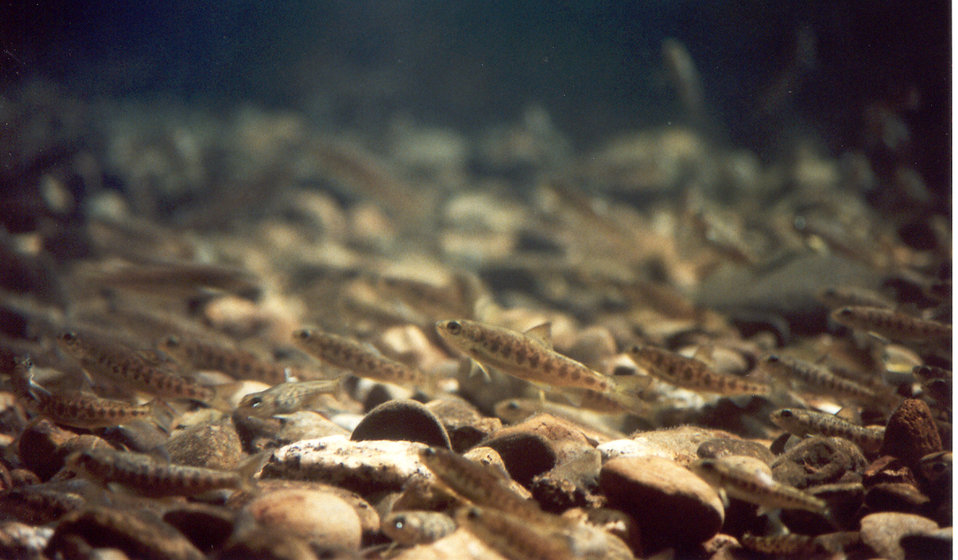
Atlantic salmon parr emerging from streambed.

As the young salmon deplete their yolk sac nutrients, they emerge from the gravel habitat to feed. They pick out a 'home rock' or plant, from which they dart out to capture insect larvae and other food passing in the conveyor belt of their home stream. They become territorial, guarding their home rock by driving away encroaching rivals.